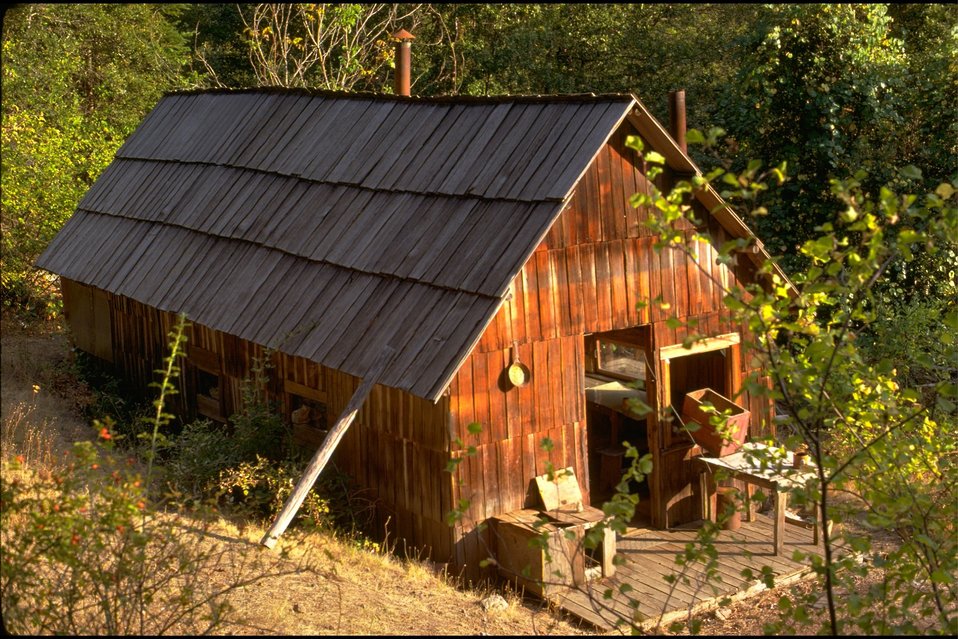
Rogue River - Cabin.